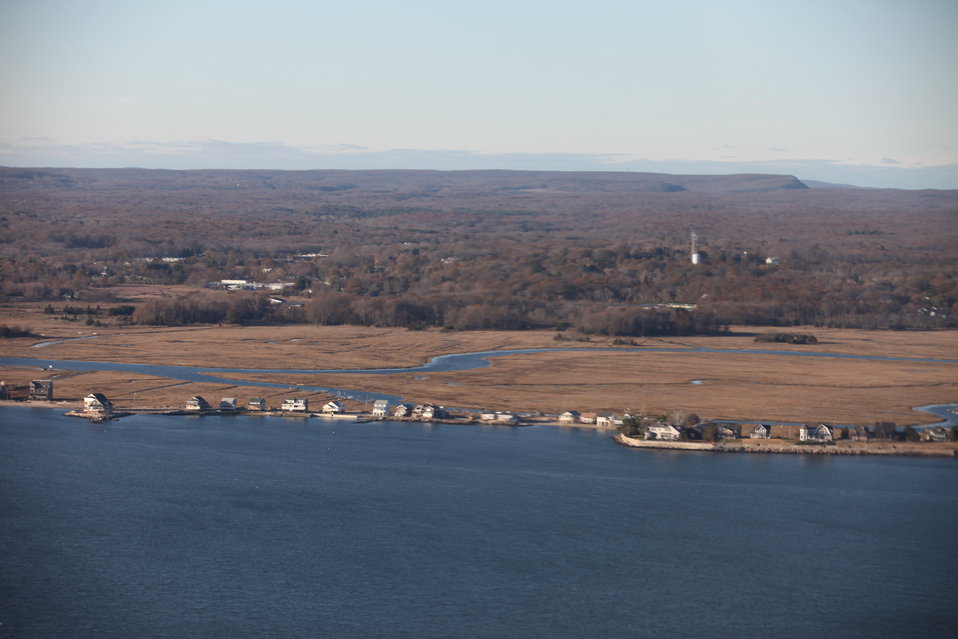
Stewart B. McKinney National Wildlife Refuge-Guilford Wetlands (CT)

Aerial view of Guilford Wetlands an area that the U.S. Fish and Wildlife Service is involved in a conservation effort near the refuge.